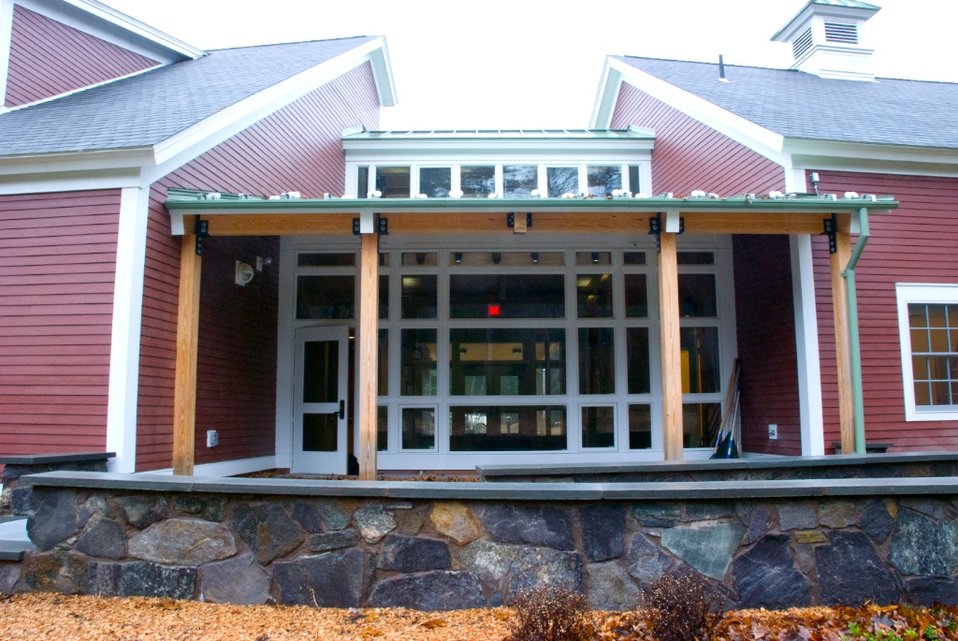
Assabet River NWR Visitor Center

In 2010, the U.S. Fish and Wildlife Service will open the doors to a new energy efficient administrative and visitor center for the Eastern Massachusetts National Wildlife Refuge Complex at the Assabet River refuge in Sudbury, Mass.

American Recovery and Reinvestment Act funding will support the fabrication and installation of exhibits that will enhance visitors' experience with information about the refuge's wildlife, habitats, and recreational opportunities.